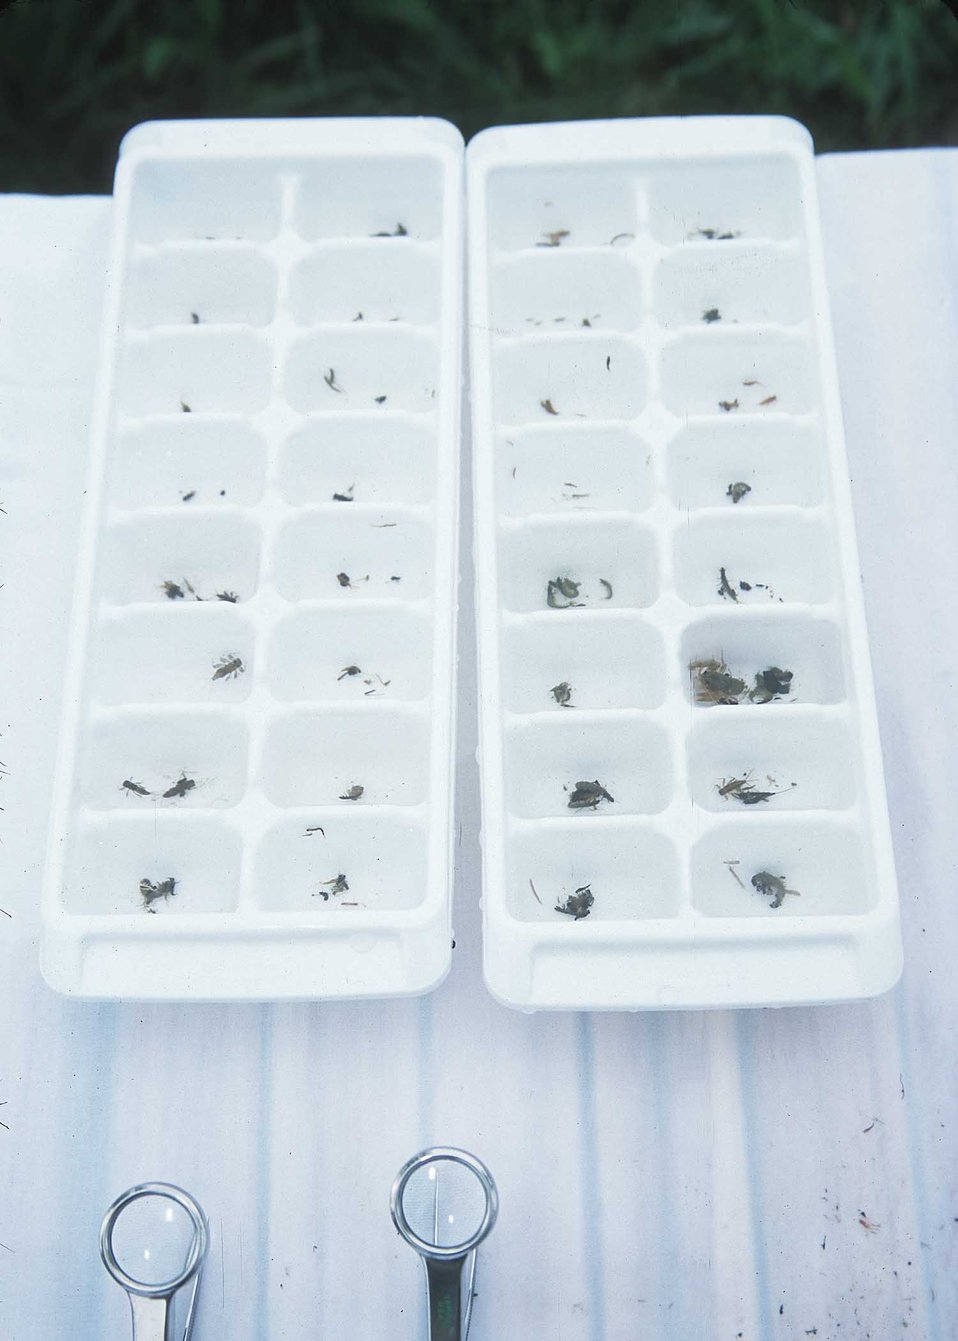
Macro invertabrates taken in biological sampling for water quality in Virginia.